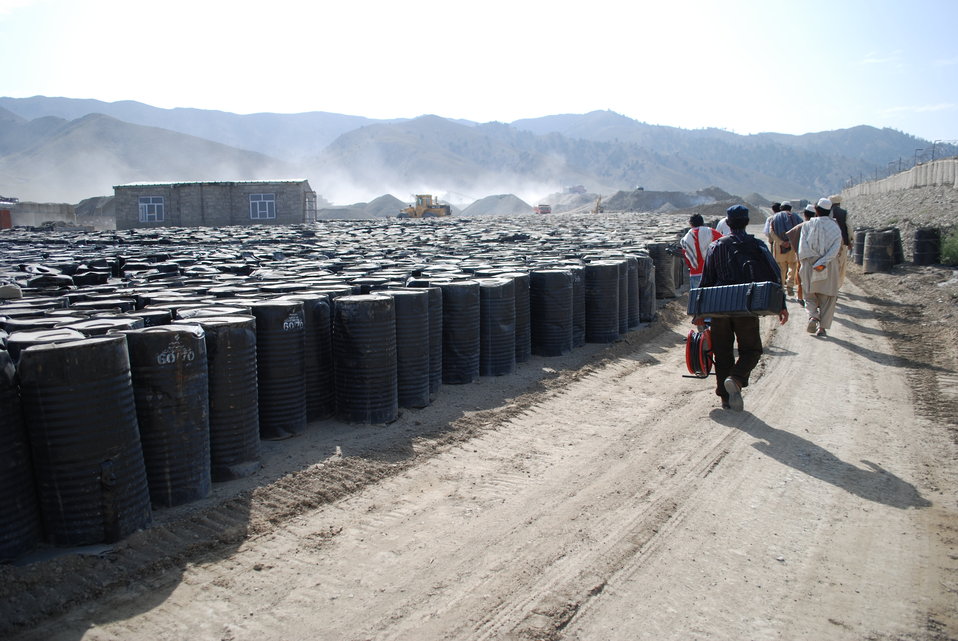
'On the Road' in Paktya Province